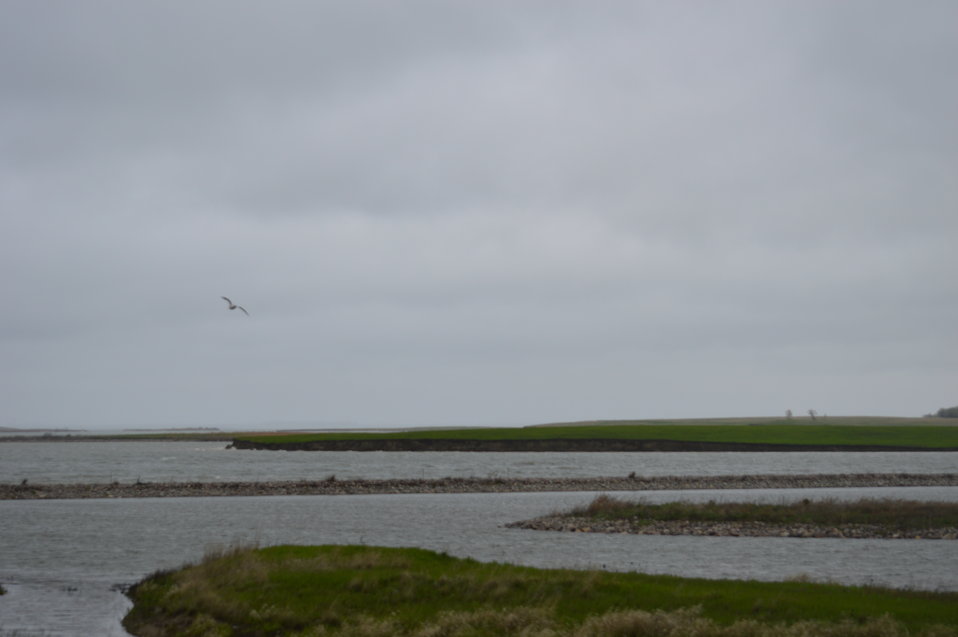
Lake Audubon

Scenery and wildlife and Audubon National Wildlife Refuge in North Dakota.